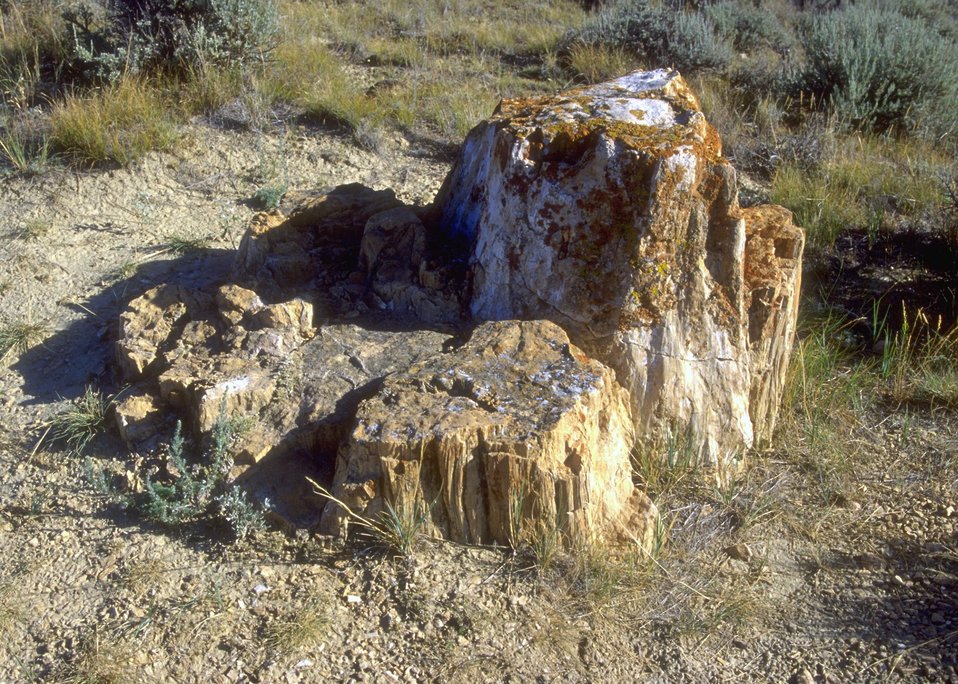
Dry Creek Petrified Tree Area, Buffalo Field Office.